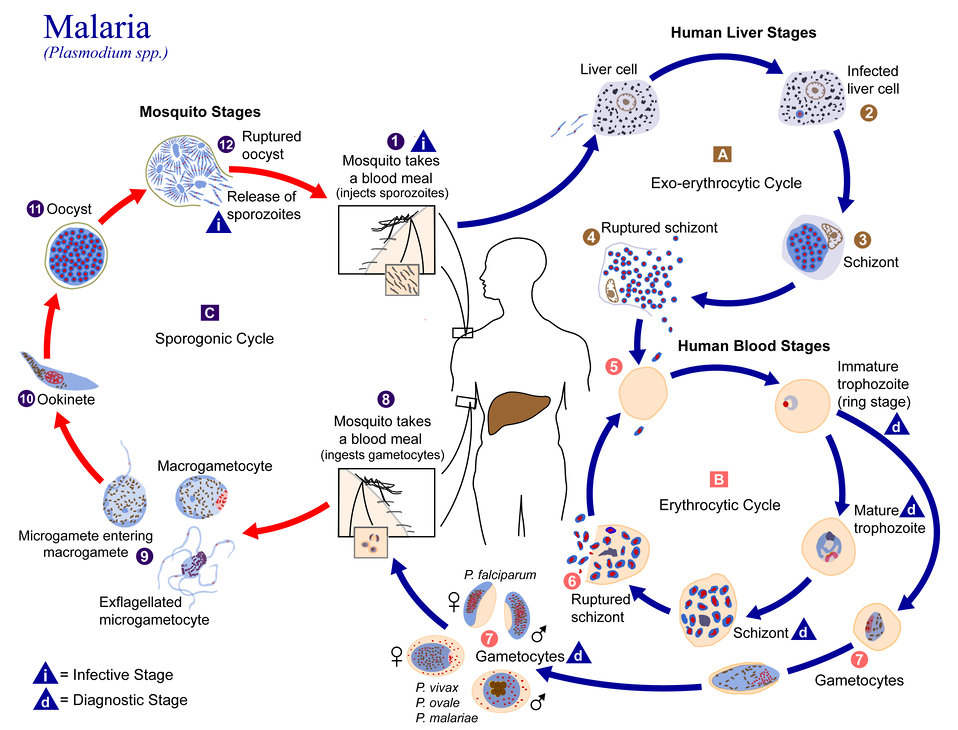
This is an illustration of the life cycle of the parasites of the genus Plasmodium that are causal agents of Malaria.